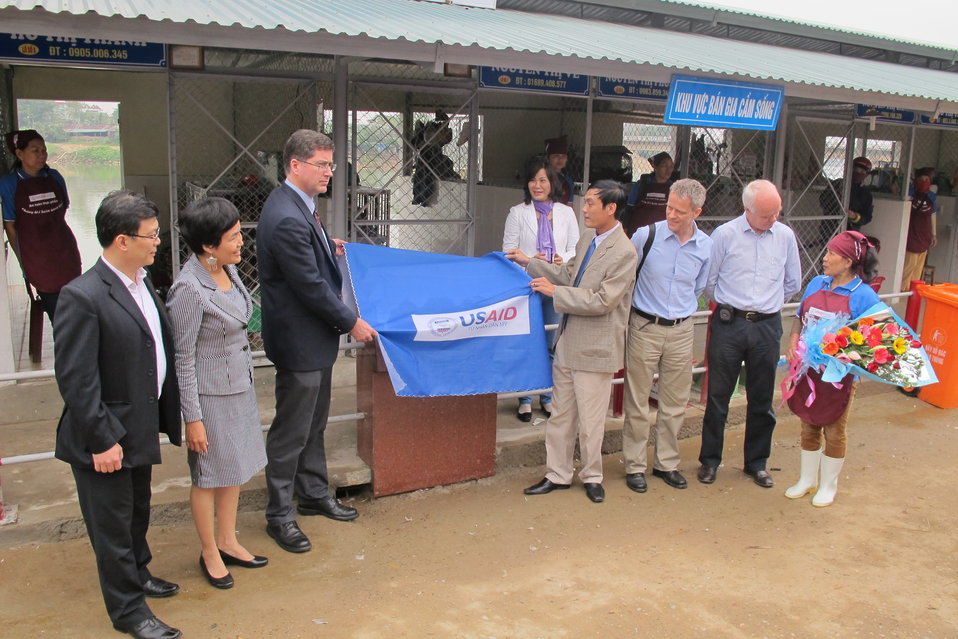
Promoting Hygiene and Sanitation at Dong Ha Poultry Market